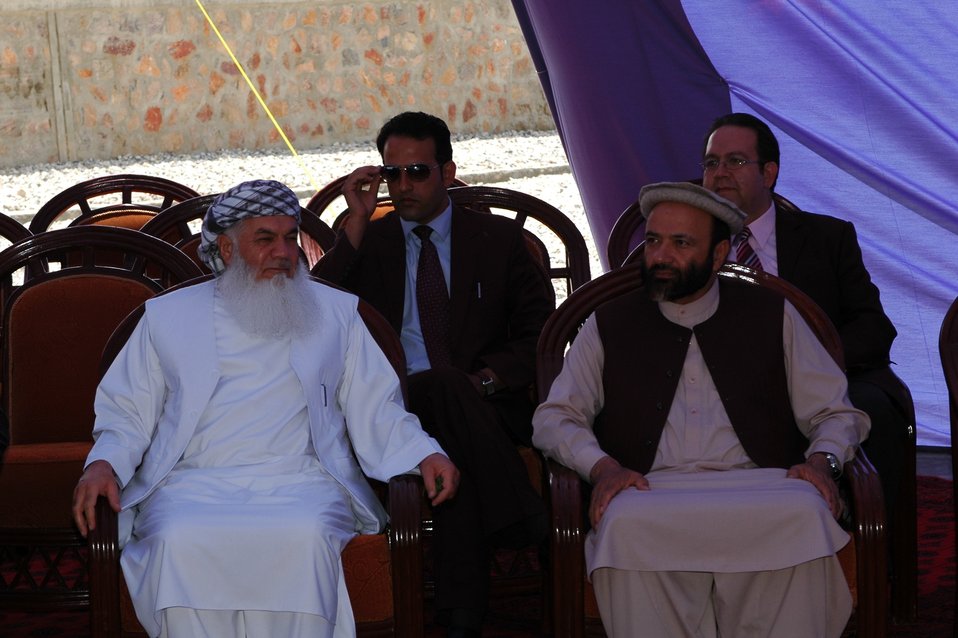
105 MW Tarakhil Power Plant Handover